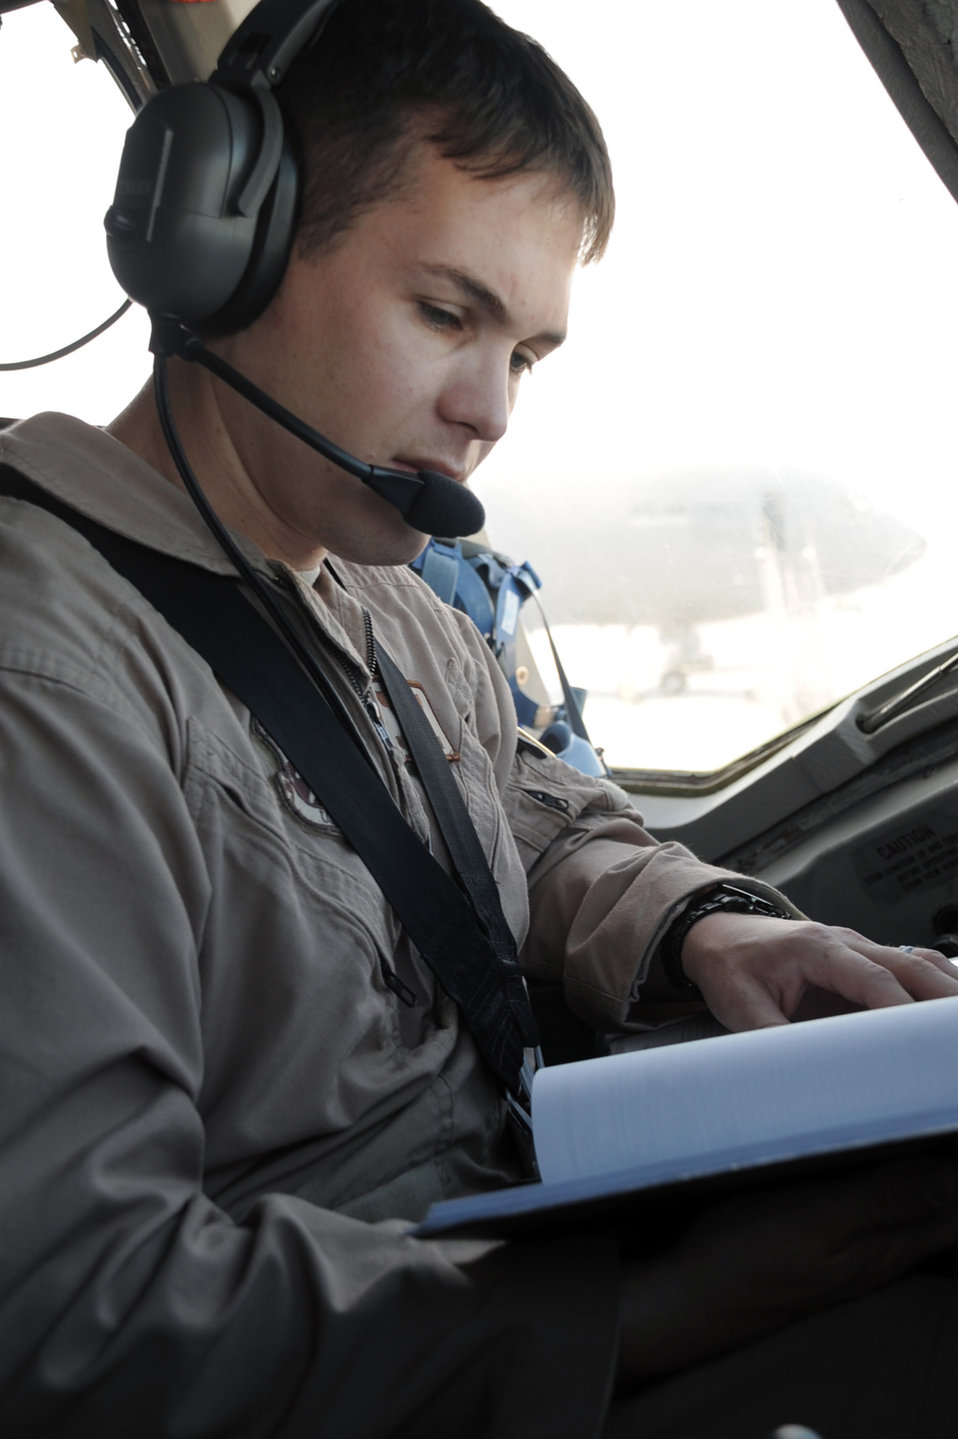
Extending the fight

Capt. Wes Spurlock, a KC-10 Extender pilot with the 908th Expeditionary Air Refueling Squadron at an air base in Southwest Asia, runs through a checklist Jan. 22, 2010, while preparing for a combat air refueling mission.